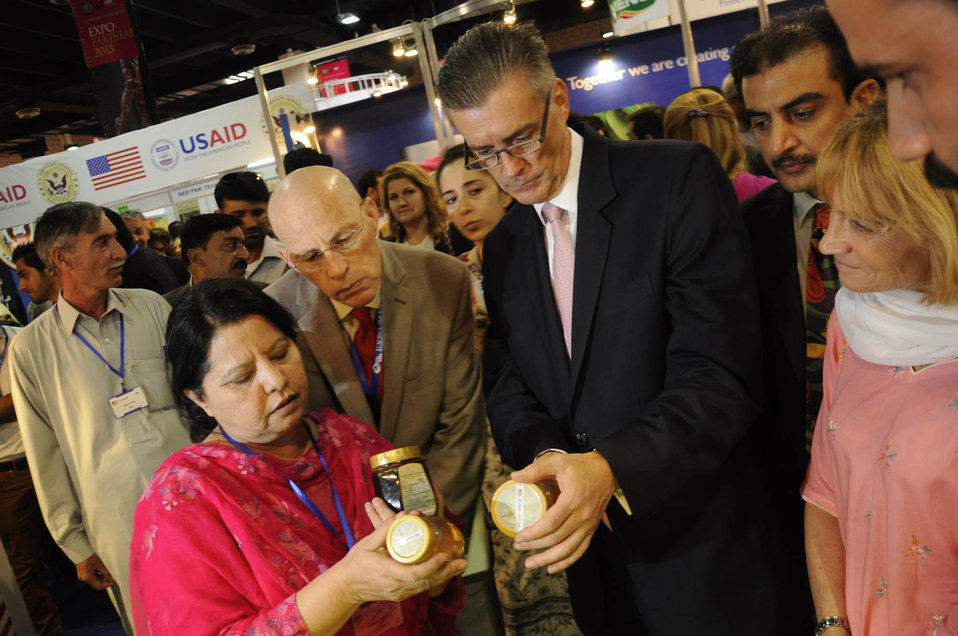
US Ambassador Mr. Richard G. Olson visiting Honey Value Chain at USAID's Entrepreneurs Project